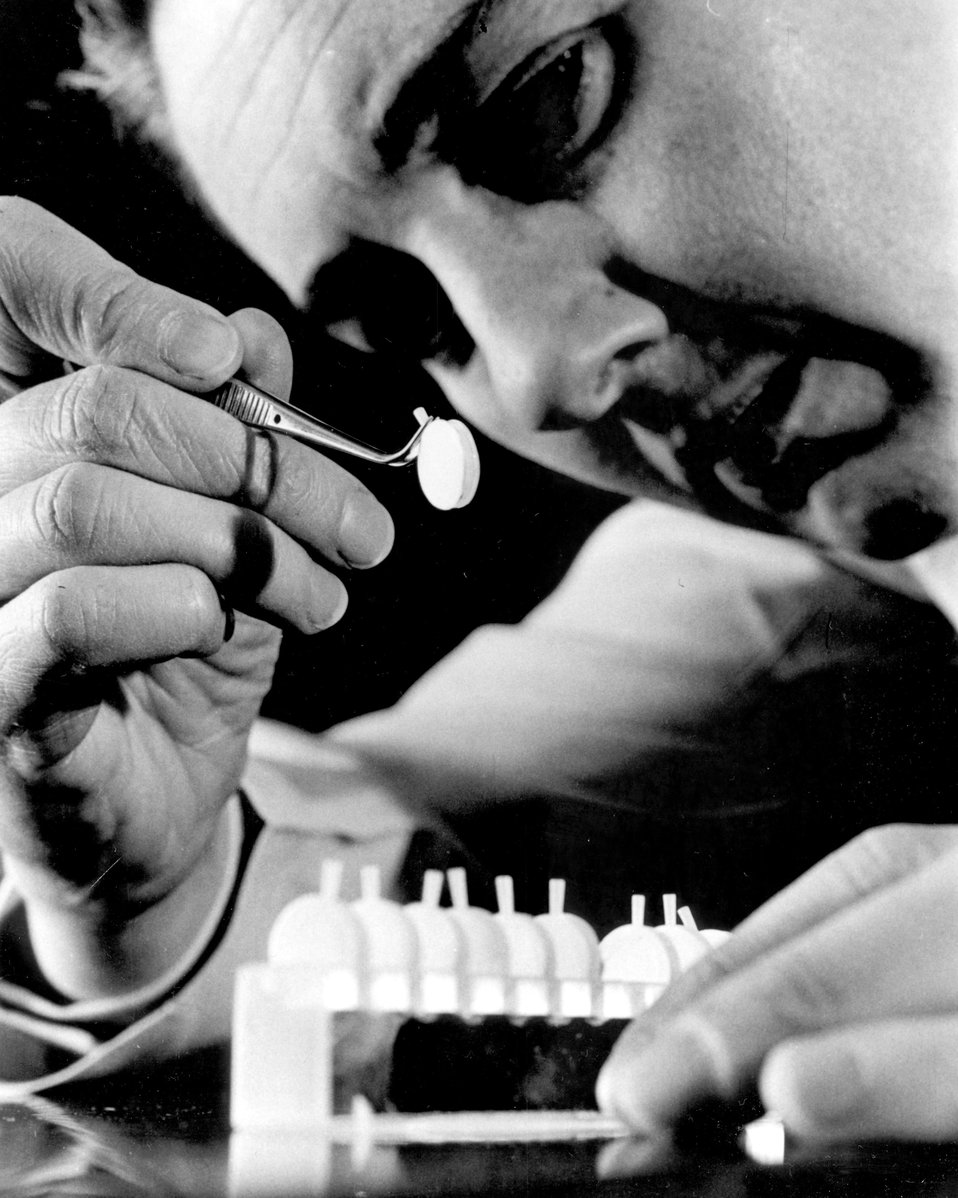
Research has made it possible to duplicate the living, continuously functioning system of human blood cell reproduction outside the human body.